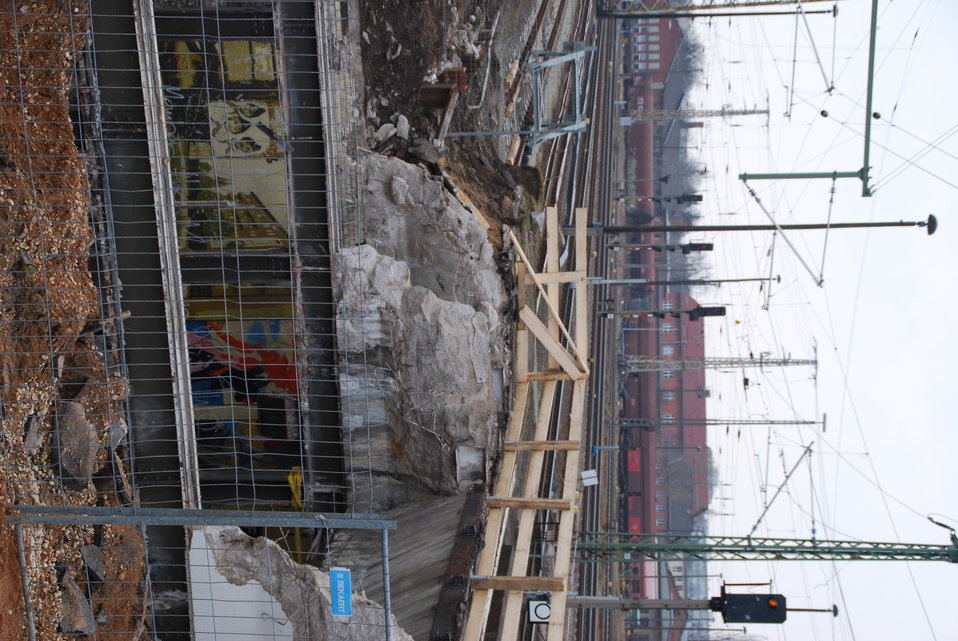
Abriss Bahnhofstunnel Frankfurt (Oder)